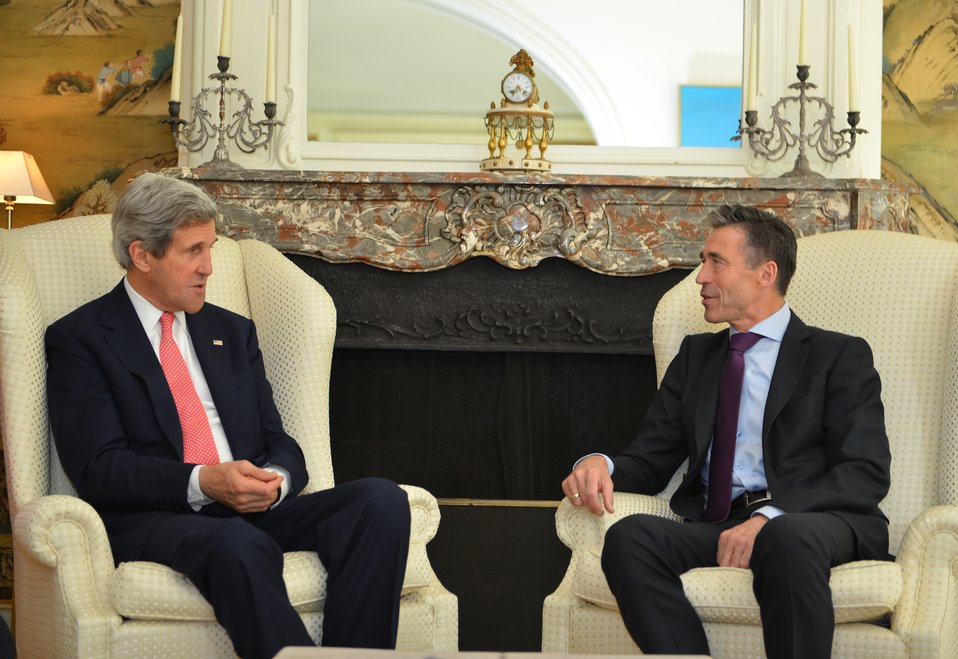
Secretary Kerry Meets With NATO Secretary General Rasmussen

U.S. Secretary of State John Kerry meets with NATO Secretary General Anders Fogh Rasmussen in Brussels, Belgium, on April 22, 2013.